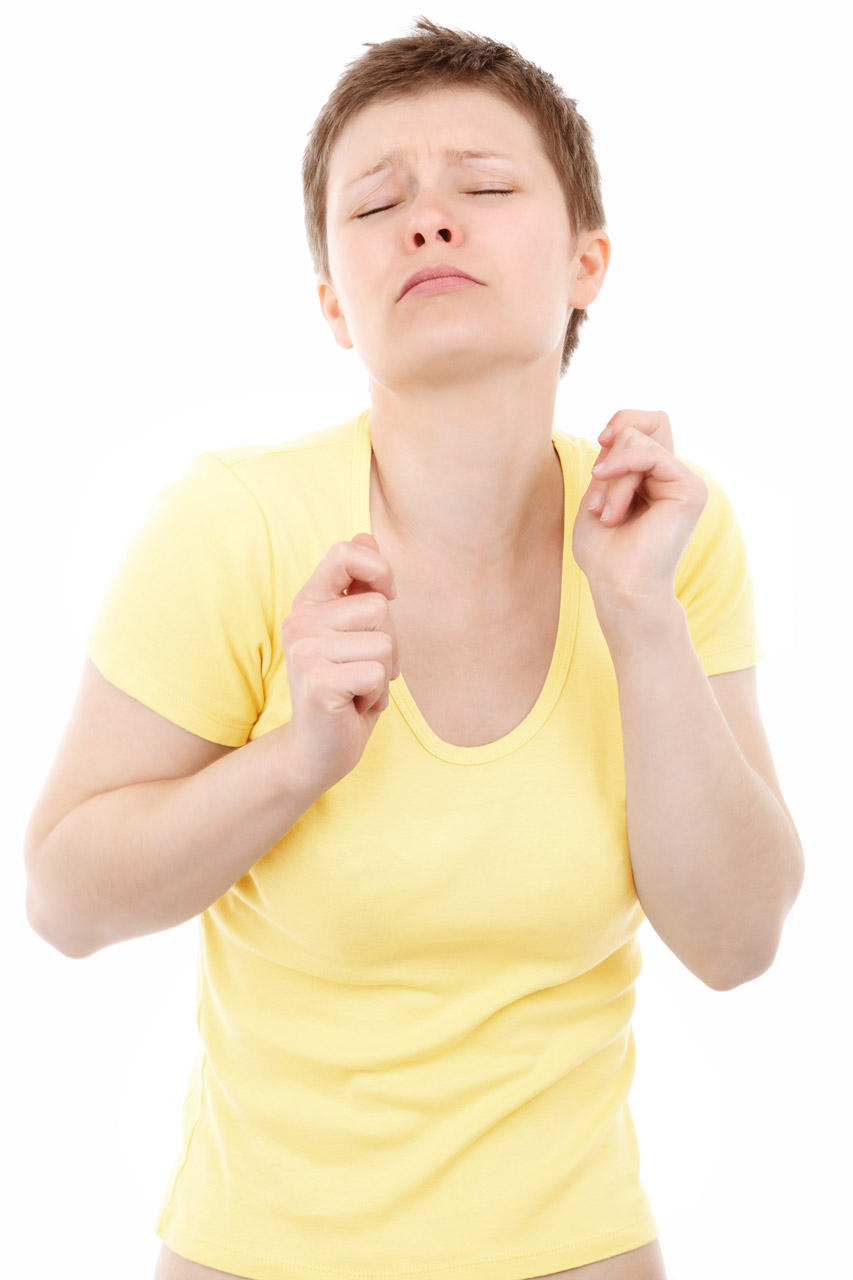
Dancing woman

Young woman listening to music and dancing isolated in yellow t-shirt on white background.